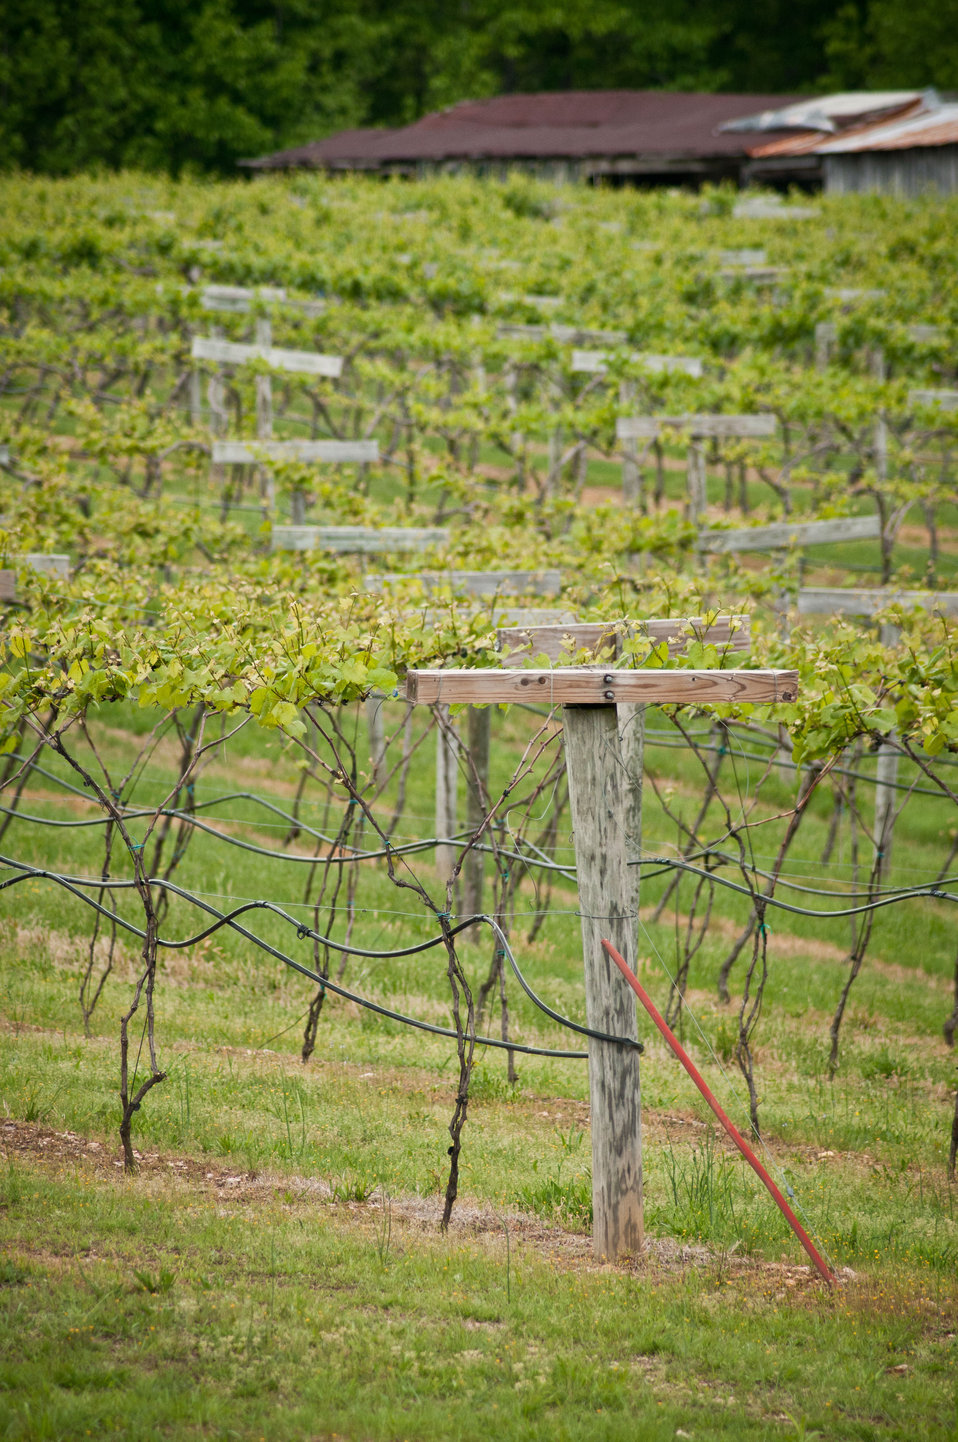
Cooper Vineyards in Louisa, VA, is the first winery on the East Coast and the second in the country to be awarded the fourth and highest, Platinum certification by Leadership in Energy and Environmental Design (LEED).
From a Virginia Wine Board Marketing Office press release, “The process of building a LEED platinum certified building was initially more expensive and arduous than co-owners, Jacque Hogge, MD and Geoffrey Cooper, MD expected, but they were able to get financial assistance from the United States Department of Agriculture. “Know that there are grants available to help with the costs of sustainable building projects,” Hogge advises to other potential green wineries. Cooper Vineyards received 2 of the 3 USDA (U.S. Department of Agriculture Rural Development (RD) Rural Energy Financing program) grants awarded in Virginia in 2010 to help with the expenses of their construction.”
Rural Energy Financing program focuses on loan guarantees, loans and grants to agricultural producers, businesses, cooperatives and rural residents for renewable energy systems and to make energy efficiency improvements.
The tasting room and building collects rainwater from the roof; uses low flow water fixtures to reduce usage by 40%; utilizes structurally insulated panels for the roof and walls; heats and cools the entire building using a geothermal system that includes pipes that are embedded in the parking lot; low-voltage LED lighting with daylight and occupancy sensors provide ample light when it is needed; a solar panel array provides more than 15% of the energy needs for the building, and much of the construction materials are from local and recycled material sources. For more information about USDA please go to www.usda.gov, Rural Development and Rural Energy Financing. LEED was developed by the U.S. Green Building Council (USGBC) is a 501 c3 non-profit organization committed to a prosperous and sustainable future for our nation through cost-efficient and energy-saving green buildings.